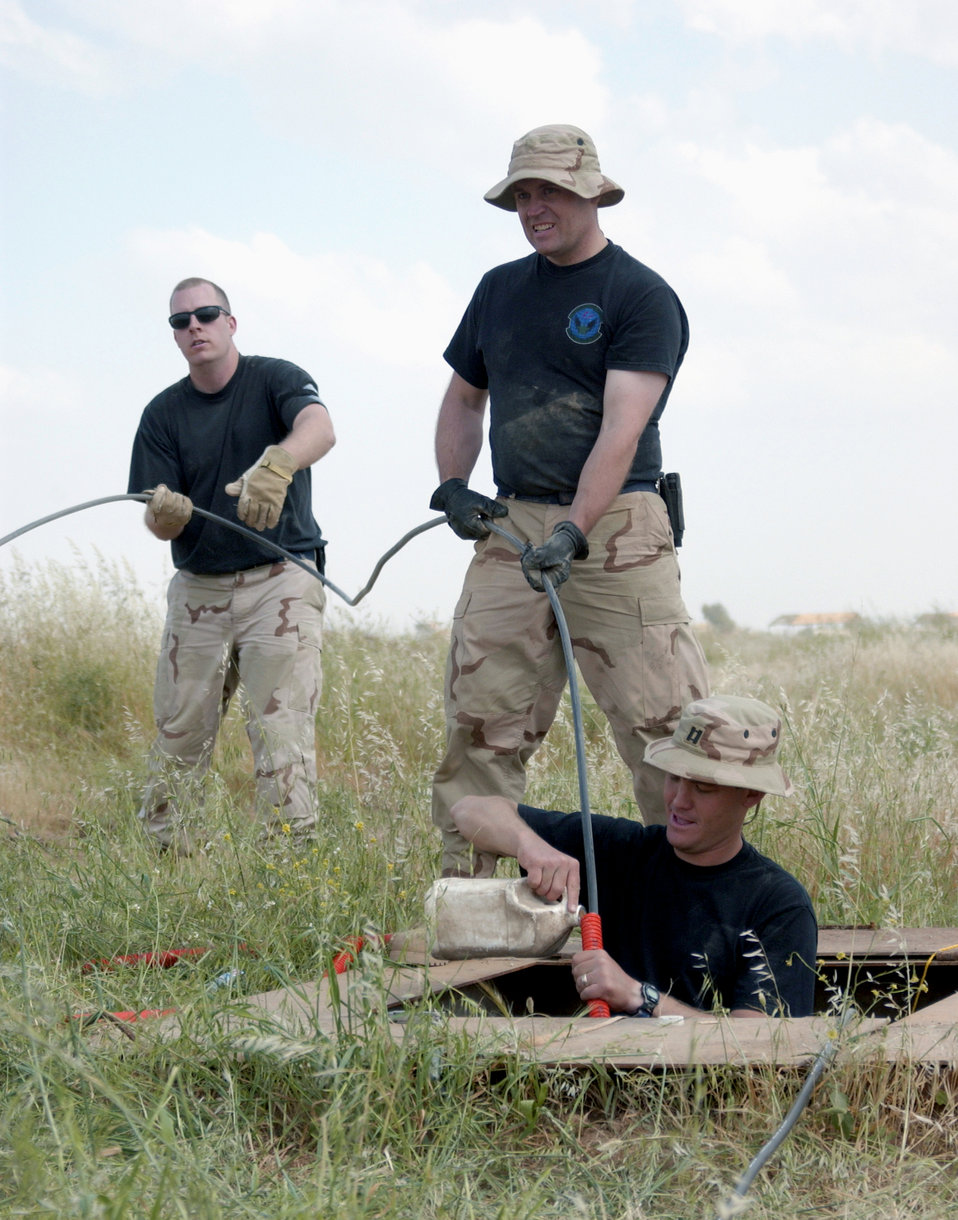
Cable guys

KIRKUK AIR BASE, Iraq -- (From left to right) Staff Sgt. Steven Norman, Tech. Sgt. Brian Wunderlin and Capt. Graham Bloxom run fiber-optic cable throughout the base here April 16. Captain Bloxom and Sergeants Wunderlin and Norman are all members of the 506th Expeditionary Communications Squadron.